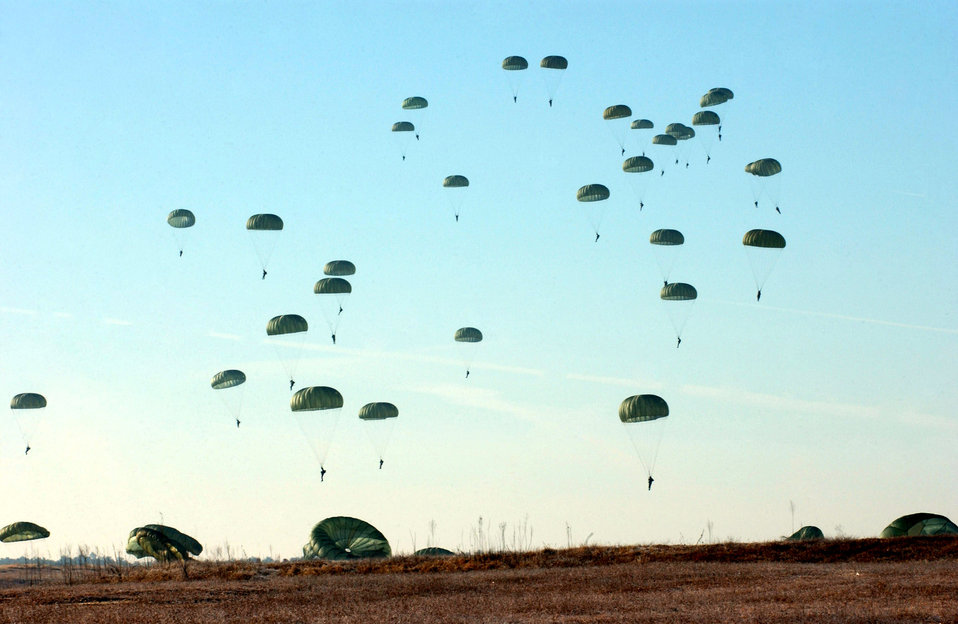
Operation Toy Drop

FORT BRAGG, N.C. (AFPN) -- Paratroopers with the 82nd Airborne Division land at Drop Zone Sicily here in the 8th Annual Randy Oler Memorial Operation Toy Drop. The event was designed to collect toys for the children of military families here and at Pope Air Force Base, N.C., as well as those in the surrounding communities. Paratroopers participated by donating a toy in exchange for a chance to jump with German and Irish military jumpers. To date, Operation Toy Drop has collected and distributed more than 14,000 toys.